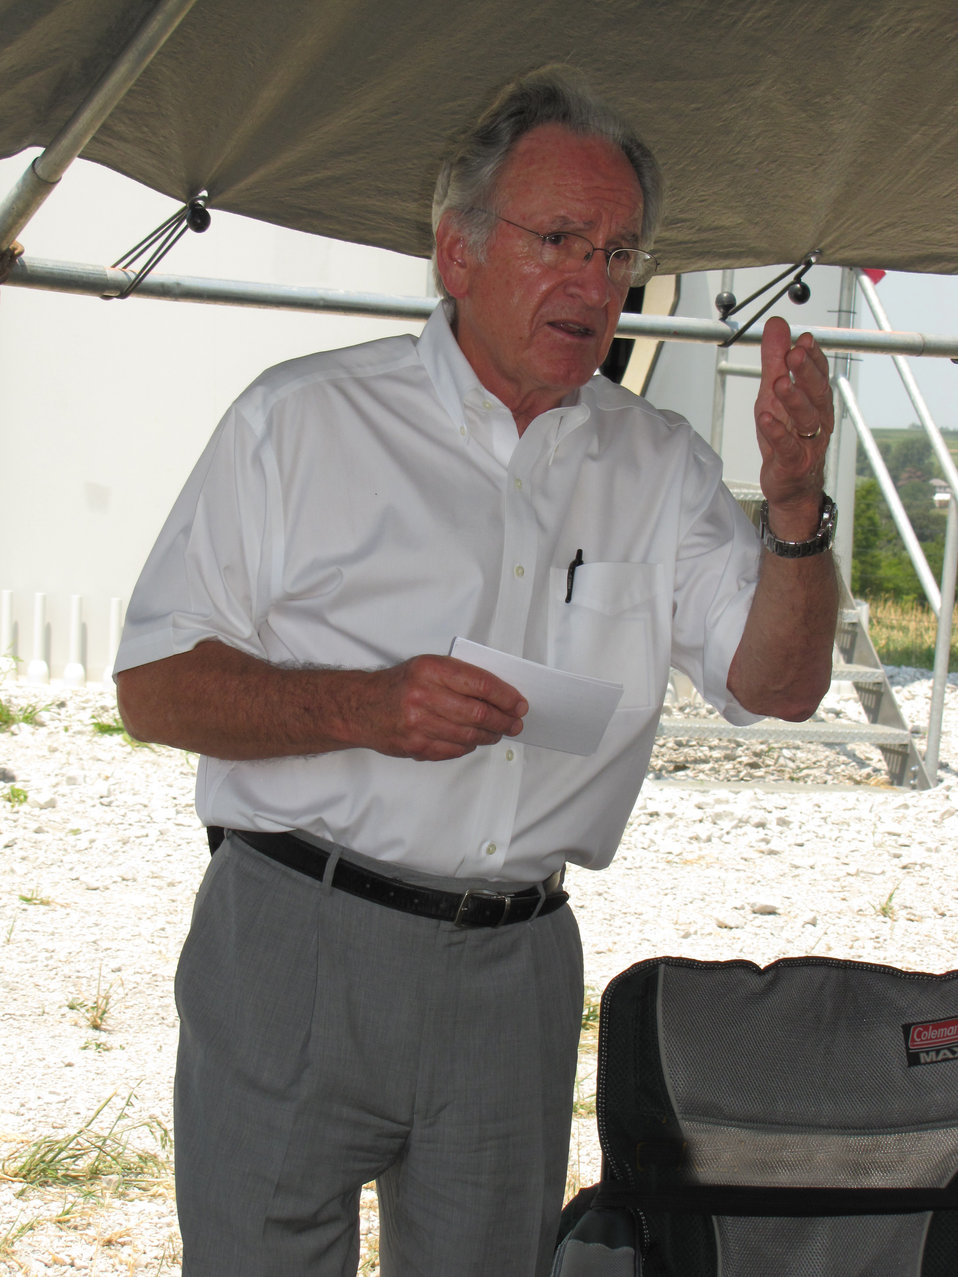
Sen Harkin Iowa Visit July 2 4

U.S. Senator Tom Harkin (IA) discusses the wind turbine project in Wiota, IA on July 2, 2012. The $3 million project required 22 local investors and a loan guarantee from U.S. Department of Agriculture’s (USDA) Rural Development (RD) Rural Energy for America Program (REAP).